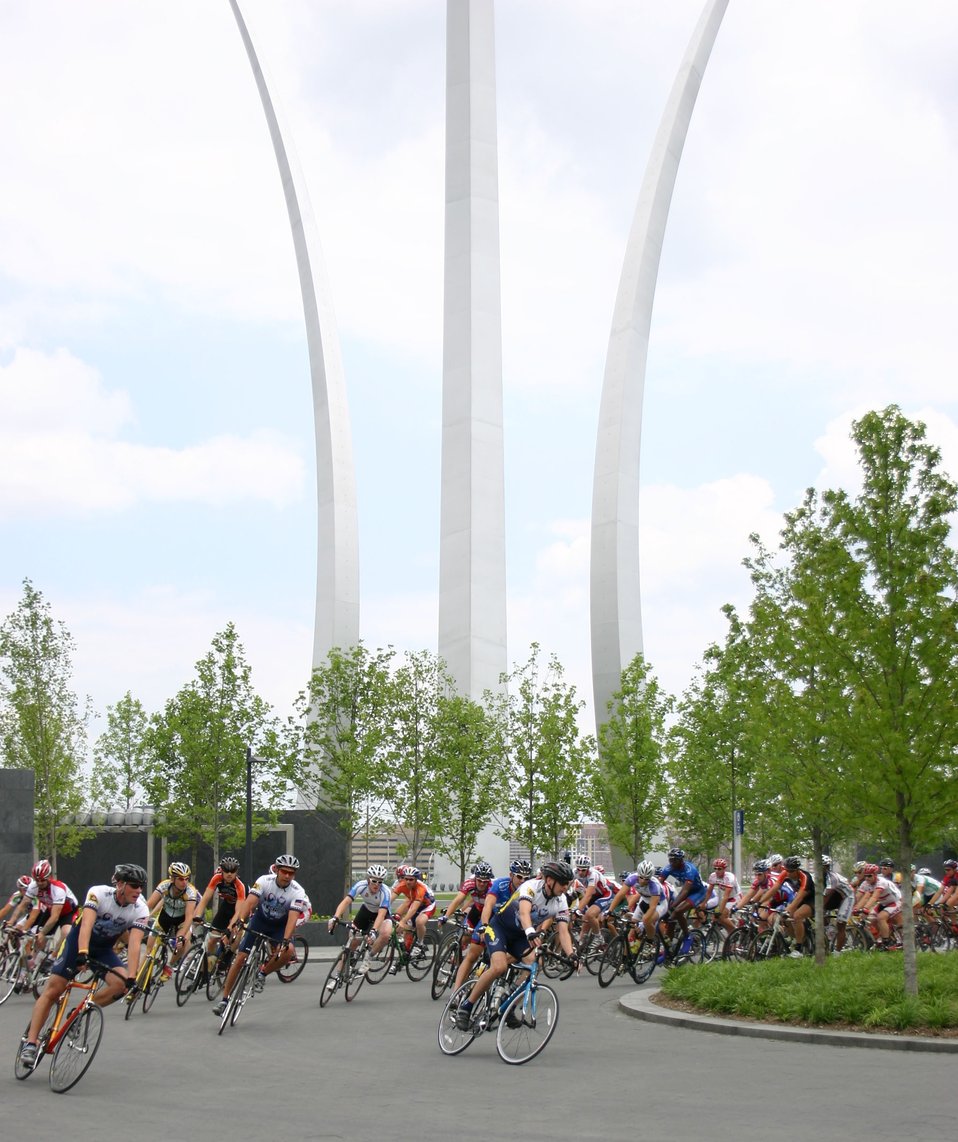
cycling

Members of the Air Force cycling team pace the men's pro riders on a parade lap that took them by the Air Force Memorial at Arlington, Va., June 16. The inaugural Crystal City Classic cycling event was presented by the Air Force and plans are in the works for the race to become the Air Force signature sporting event in Washington D.C.